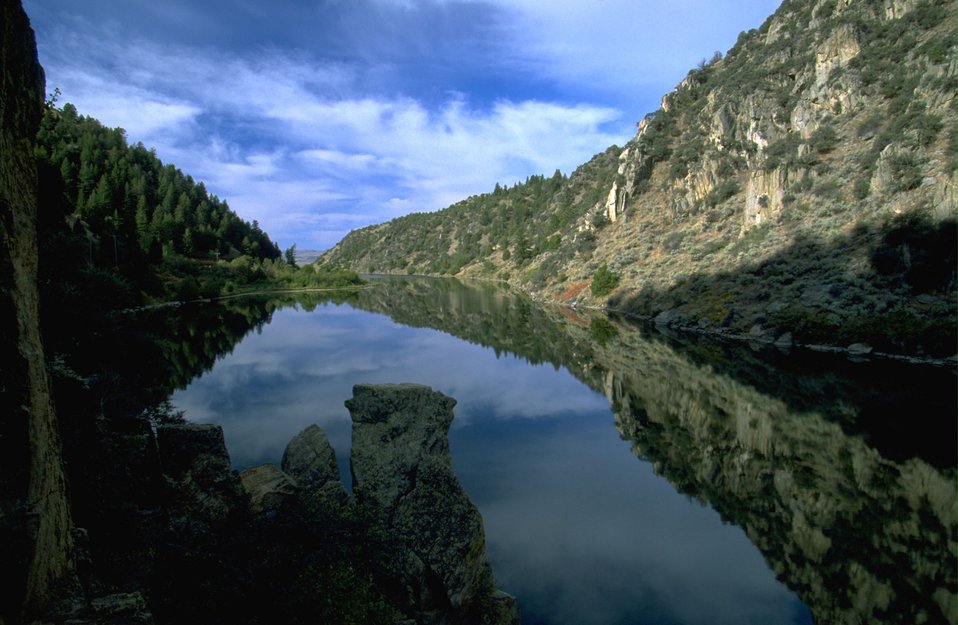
Reflection of sky on water